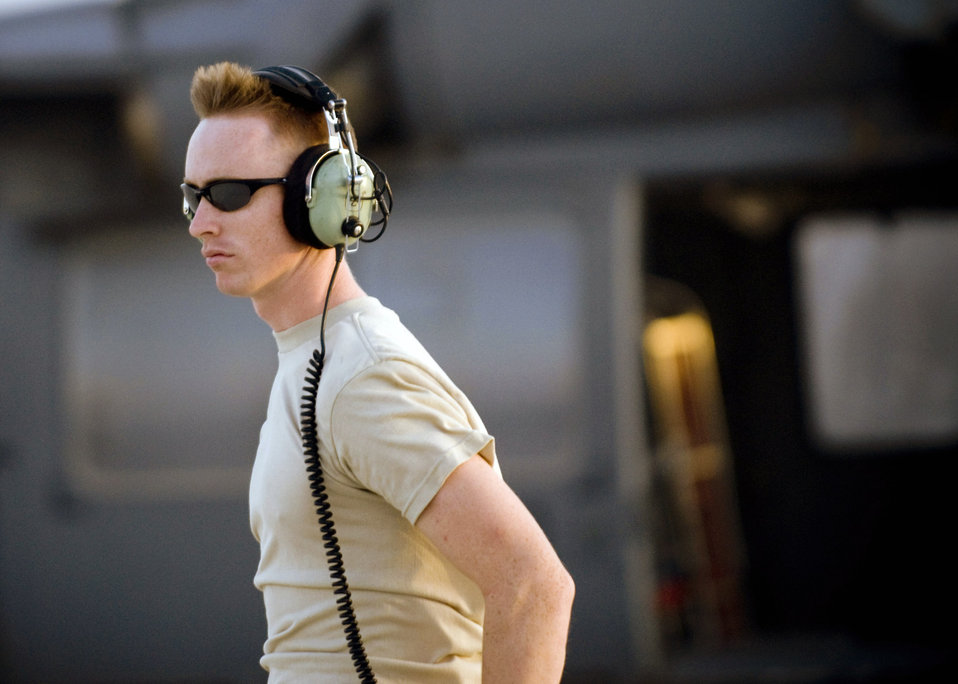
Flying with the Pave Hawks

Senior Airman Andrew Stevenson, a 33rd Expeditionary Helicopter Maintenance Unit crew chief, performs a preflight walk-around of his HH-60G Pave Hawk Aug. 2, at Bagram Air Base, Afghanistan. As a crew chief, Airman Stevenson ensures the operability of the helicopter. He is deployed from the 33rd Helicopter Maintenance Unit at Kadena AB, Japan.